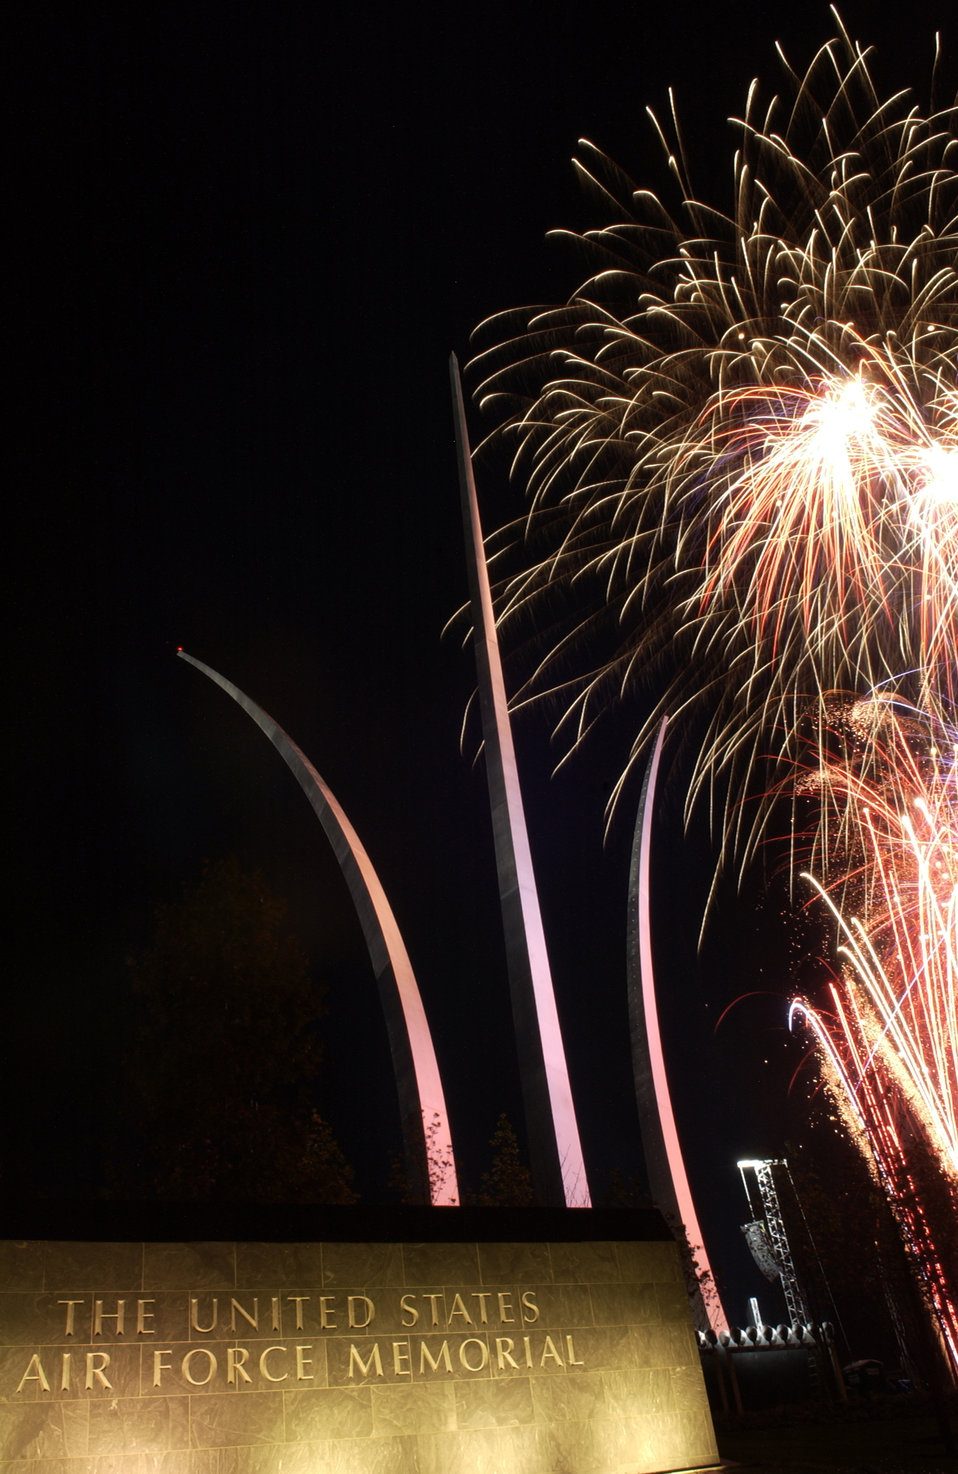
Fireworks light the night sky at memorial dedication event

Fireworks light up the Air Force Memorial Oct. 13 at Arlington, Va., on the eve of its official dedication ceremony. President George W. Bush will join senior Defense Department and Air Force officials in a ceremony to present the memorial to the nation today. Designed by the late James Ingo Freed, the memorial with its three soaring spires inspired by the U.S. Air Force Thunderbirds bomb burst maneuver, pays tribute to and honors the men and women of the U.S. Air Force and its predecessor organizations.